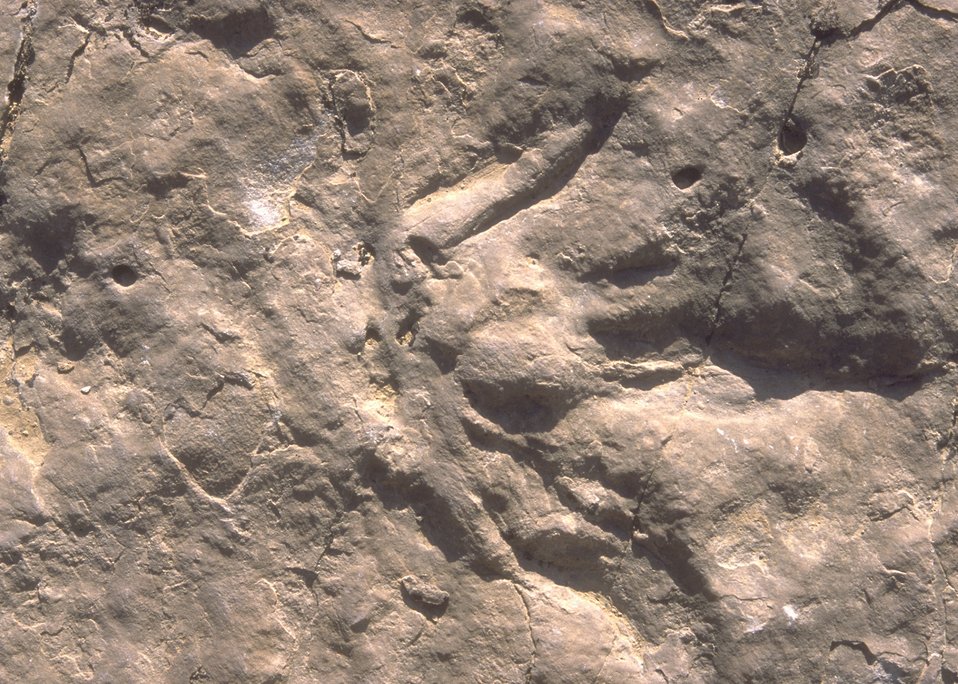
Detail of dinosaur tracks at the Red Gulch Dinosaur Tracksite, Worland Field Office.